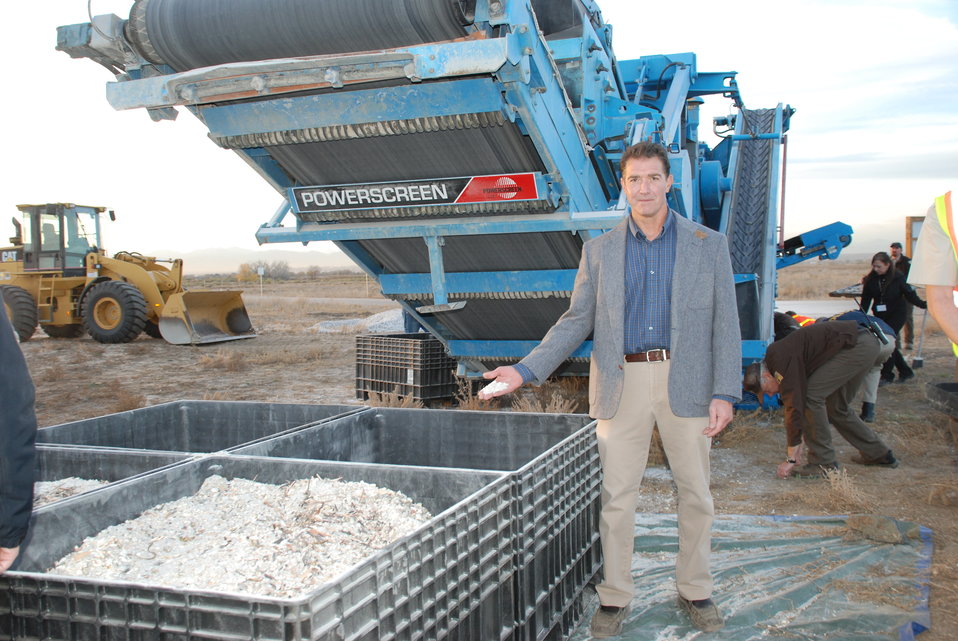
Ivory Crush 2013